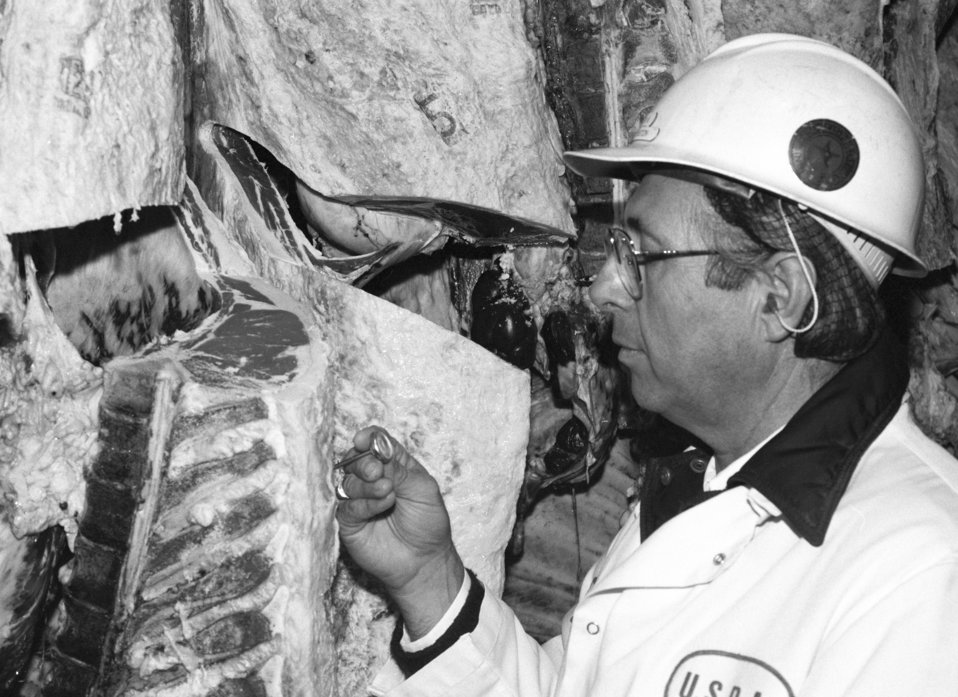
U.S. Department of Agriculture (USDA) Food Safety Inspection Service (FSIS) inspectors inspect beef using a Streamline Inspection System (SIS) at a processing plant in Plainview, TX on January 22, 1991.